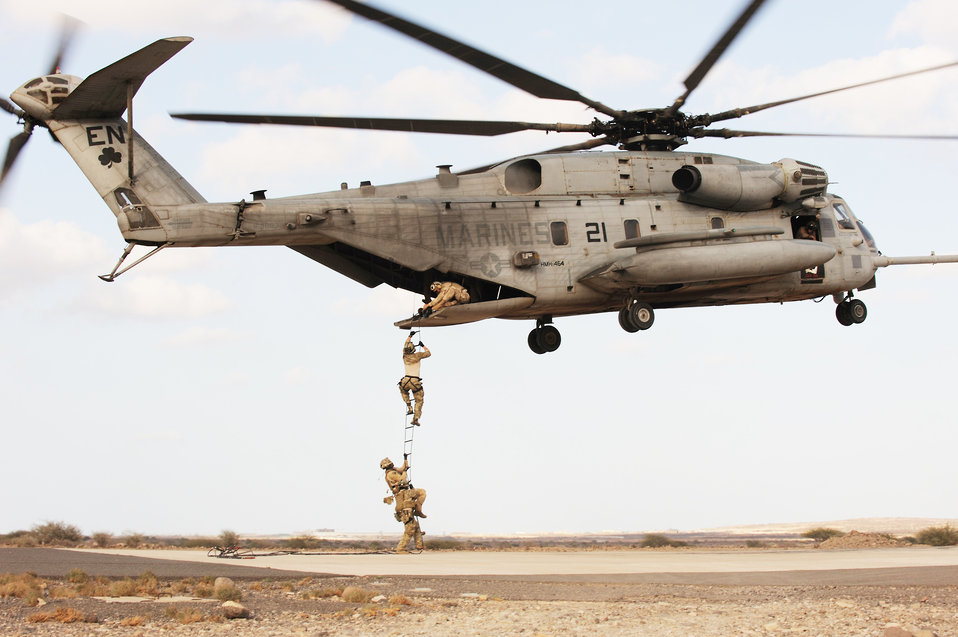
Pararescuemen hone skills in Africa

Air Force pararescuemen conduct a combat insertion and extraction exercise from a Marine CH-53 Sea Stallion helicopter in Djibouti, Africa, Jan. 5, 2010. The helicopter is attached to Heavy Marine Helicopter Squadron 464, and the two units are deployed to Combined Joint Task Force-Horn of Africa.